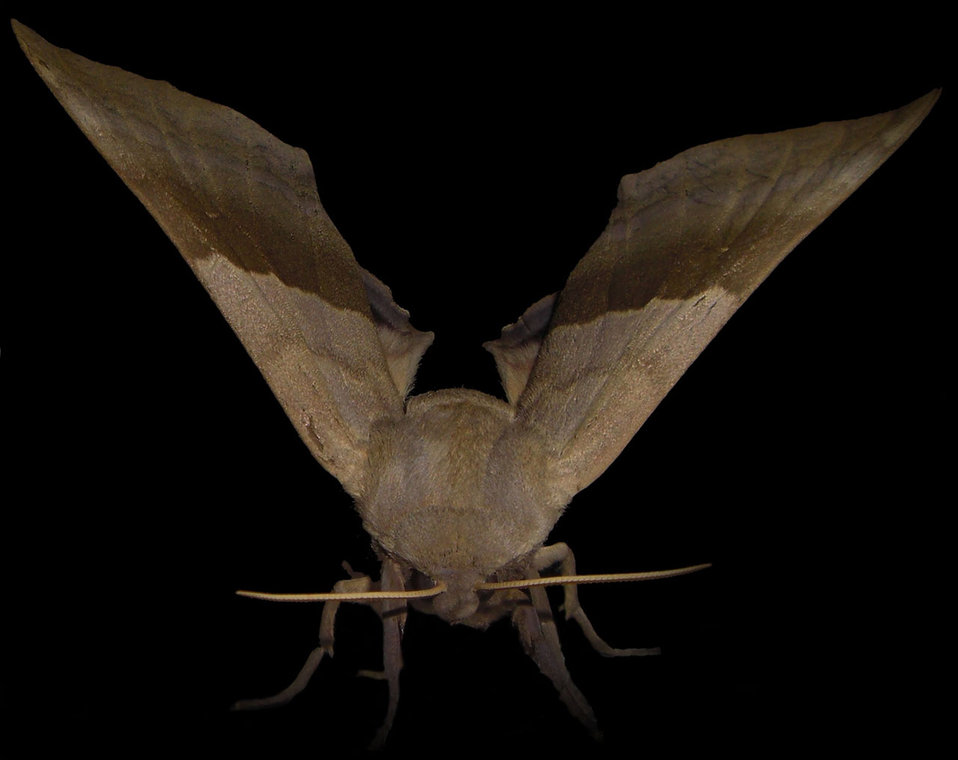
Brown moth

Moth on a black background..